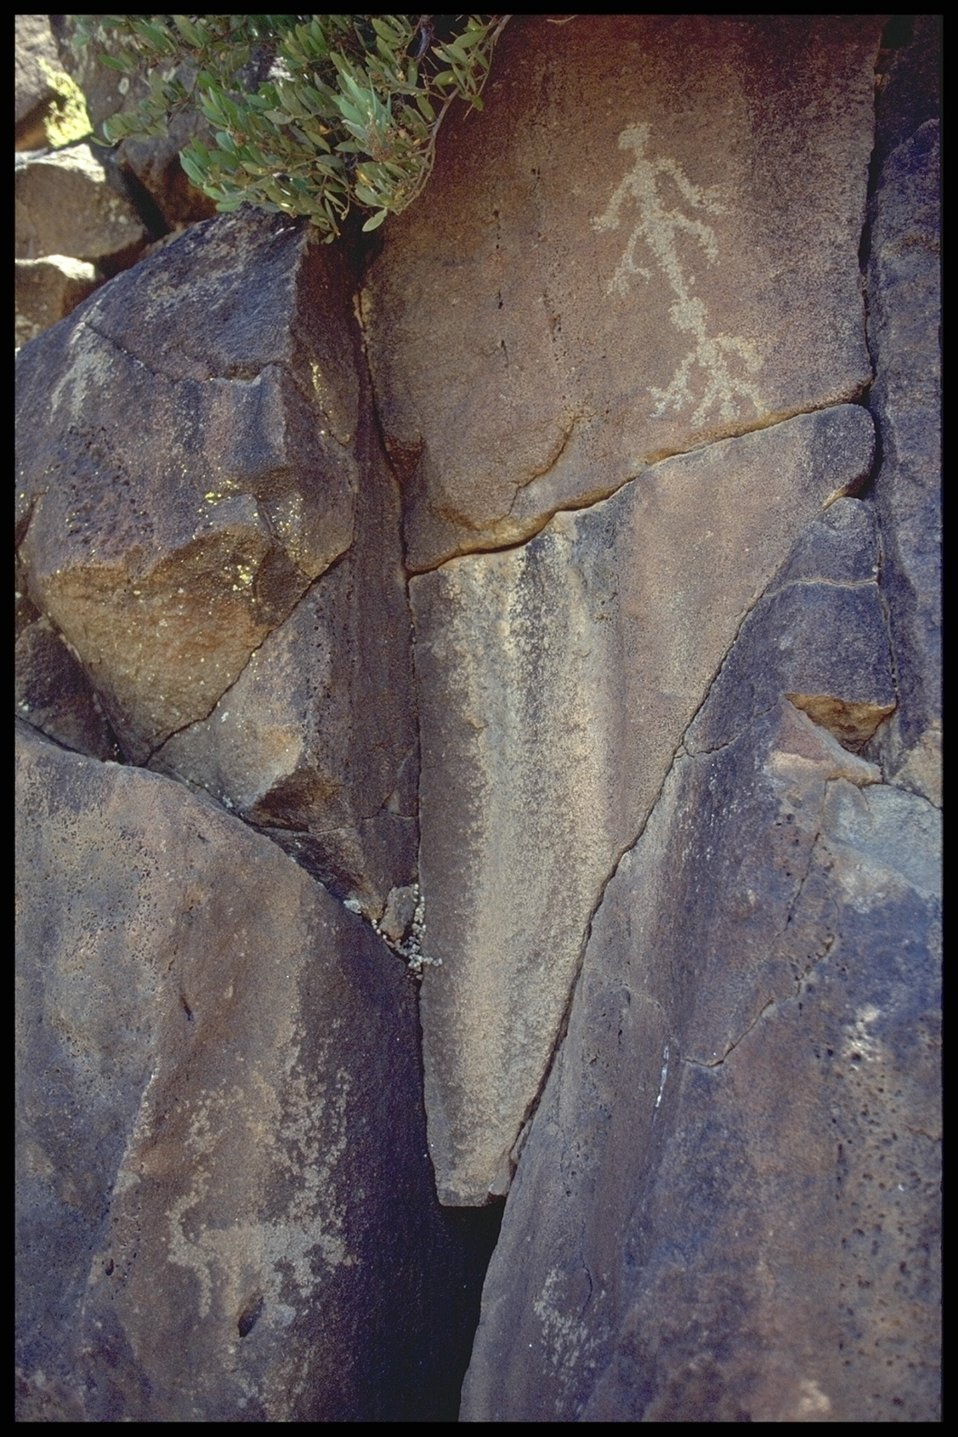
Petroglphs (Rock Art) can be found throughout the 71,000 Acres that make up the Agua Fria National Monument.